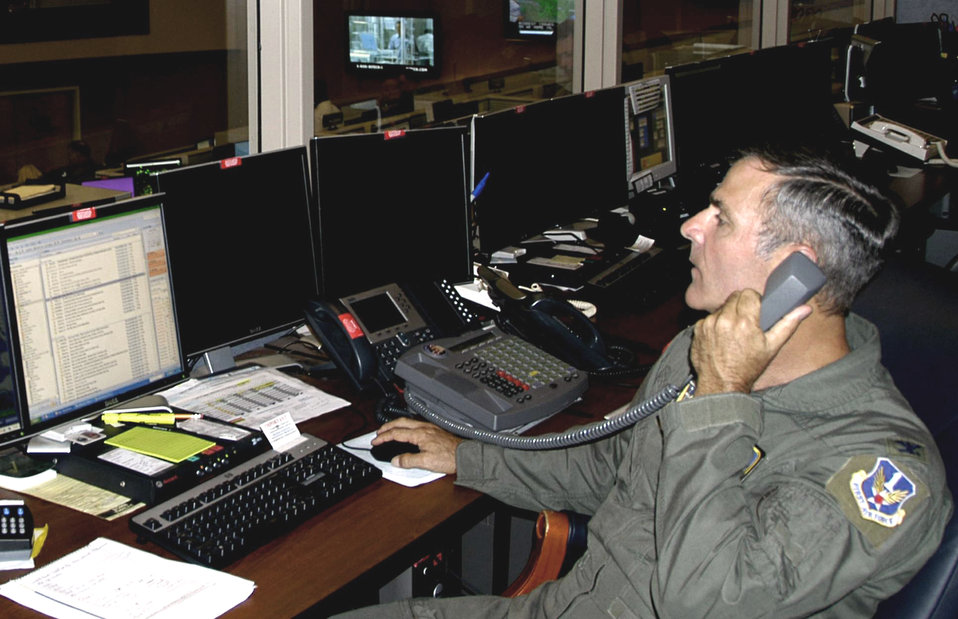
EPLOs

Col. Michael Hare, Air Force National Security Emergency Preparedness director, monitors Hurricane Gustav on the operations floor of the air operations center at Tyndall Air Force Base, Fla., prior to landfall. AFNEP officials are in charge of deploying emergency preparedness liaison officers, when requested, to coordinate military assets to support civil authorities.